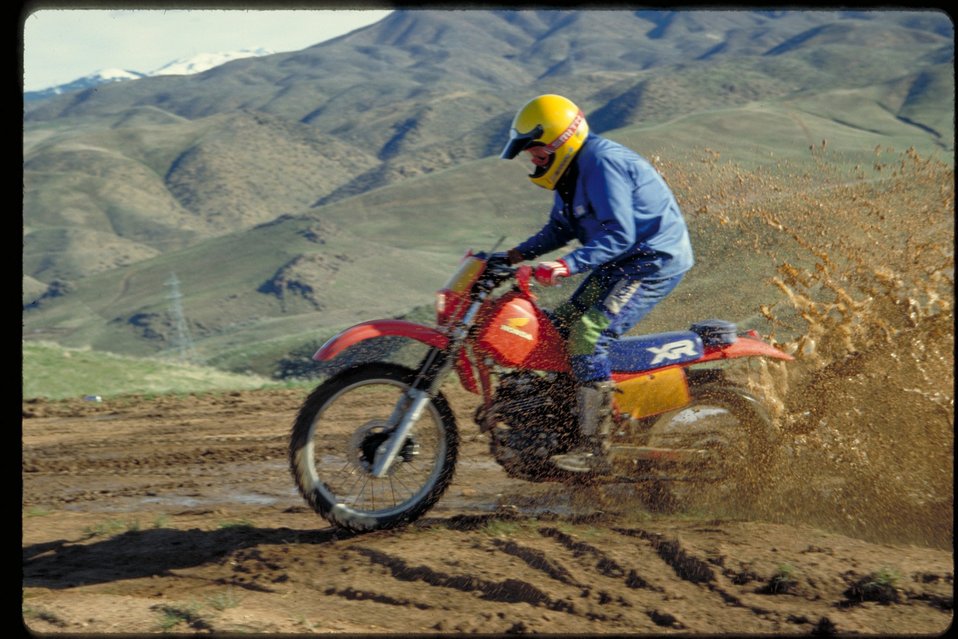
Dirtbiking on Boise Front Four Rivers Field Office LSRD Lower Snake River District